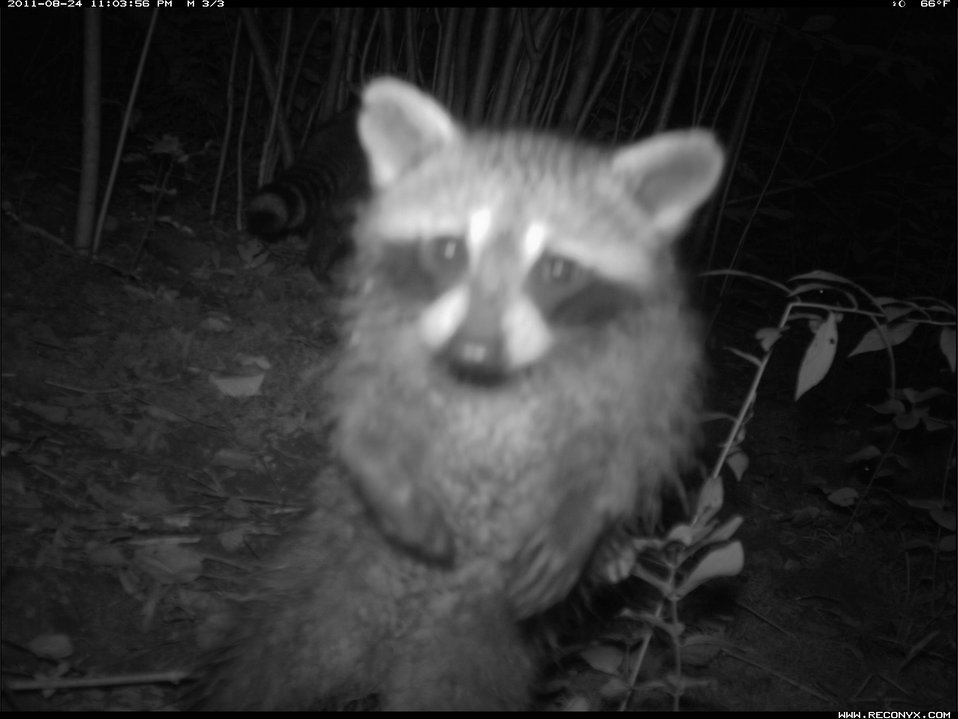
Raccoon